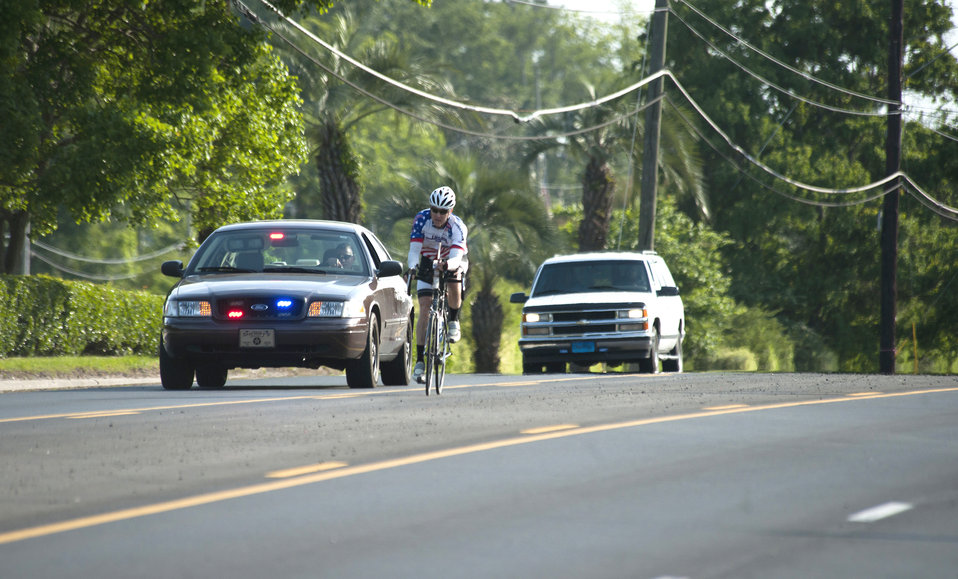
Jason Rogers, an Air Force veteran, rides his bicycle May 2, 2011, in Waycross, Ga., on the final stretch of his journey to meet a crowd of friends and family. Mr. Rogers had two police car escorts to lead him to the finish.